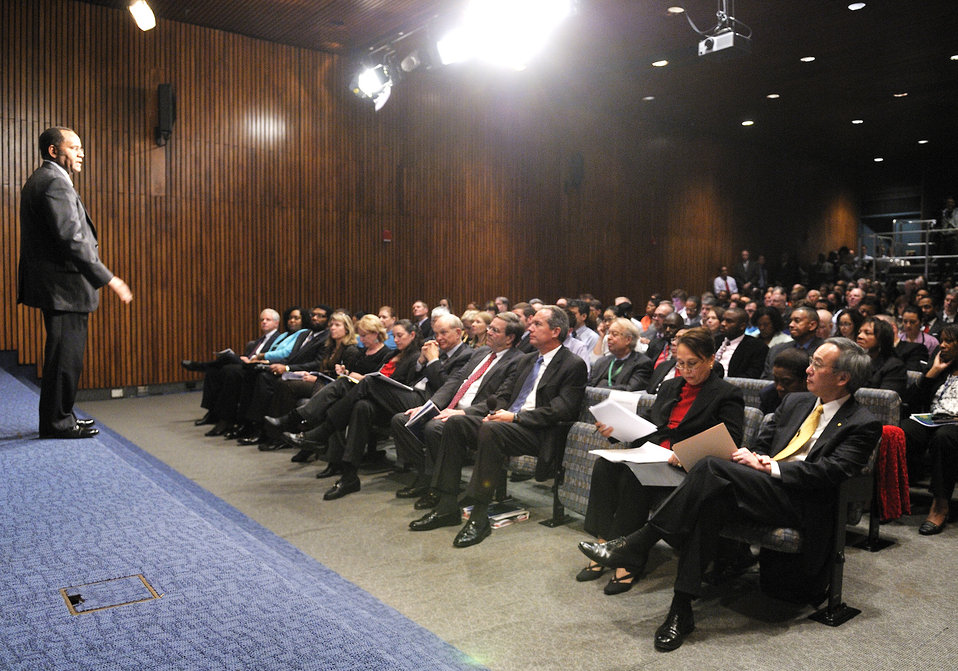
Associate Deputy Secretary Mel Williams greets the audience at the beginning of the Diversity and Inclusion Town Hall.